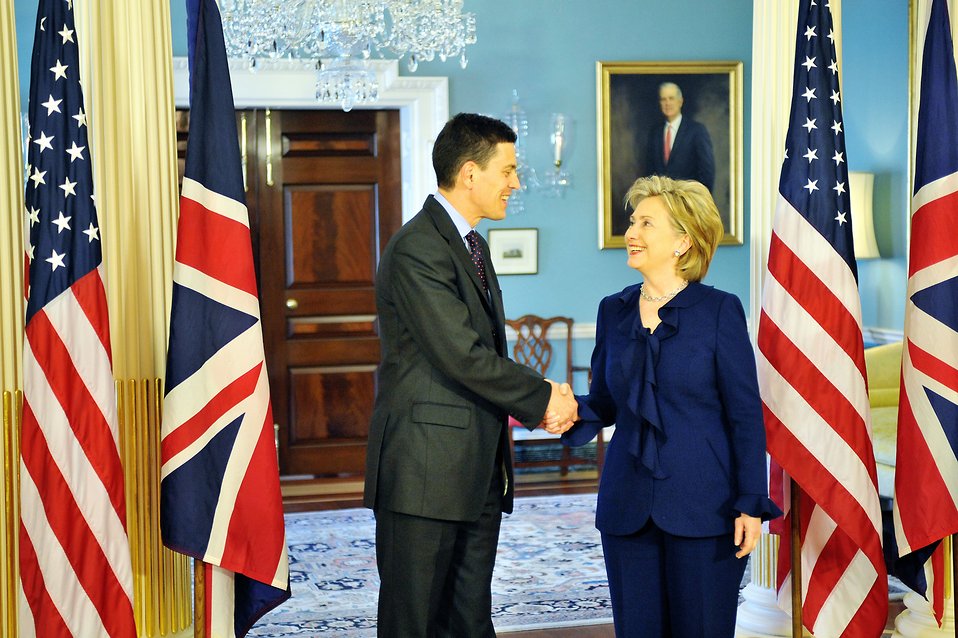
Secretary Clinton Meets With United Kingdom Foreign Minister

U.S. Secretary of State Hillary Rodham Clinton hosts a bilateral meeting with United Kingdom Foreign Secretary David Miliband in the Treaty Room of the U.S. Department of State on May 12, 2009.